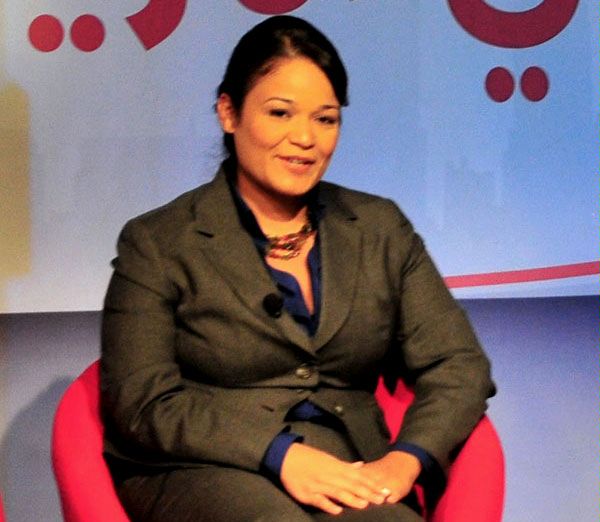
MBC1 Channel Studios Hub Deputy Director Ana Escrogima Appears on “On the Road in America”

MBC1 Channel Studios Hub Deputy Director Ana Escrogima appears as an in-studio panelist on a discussion show with the cast of “On the Road in America” in Dubai, United Arab Emirates, April 6, 2010.